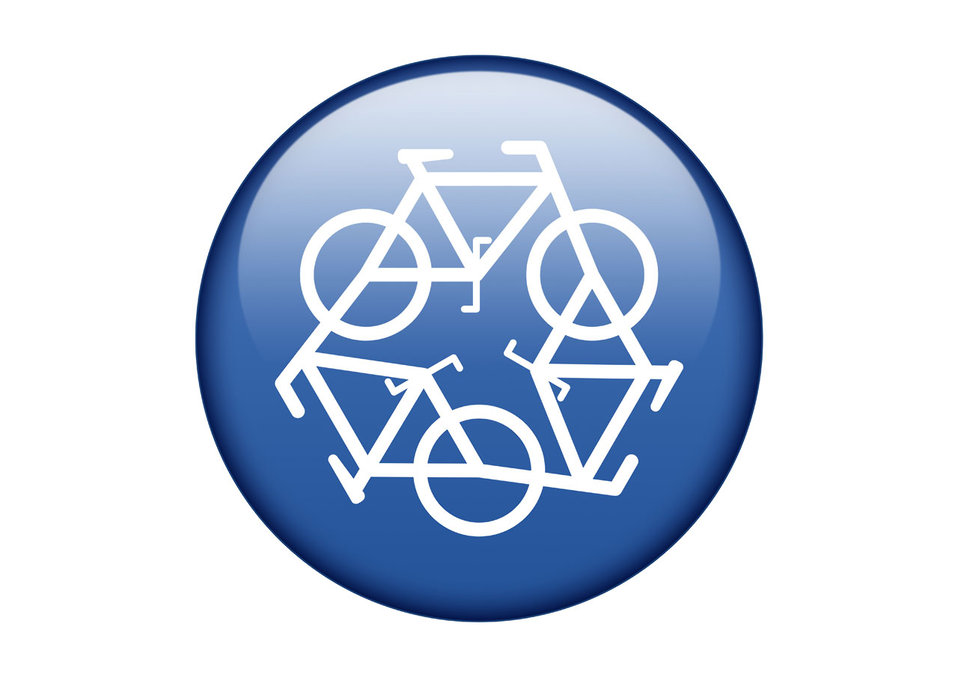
Blue recycle symbol

Interesting blue recycle symbol.